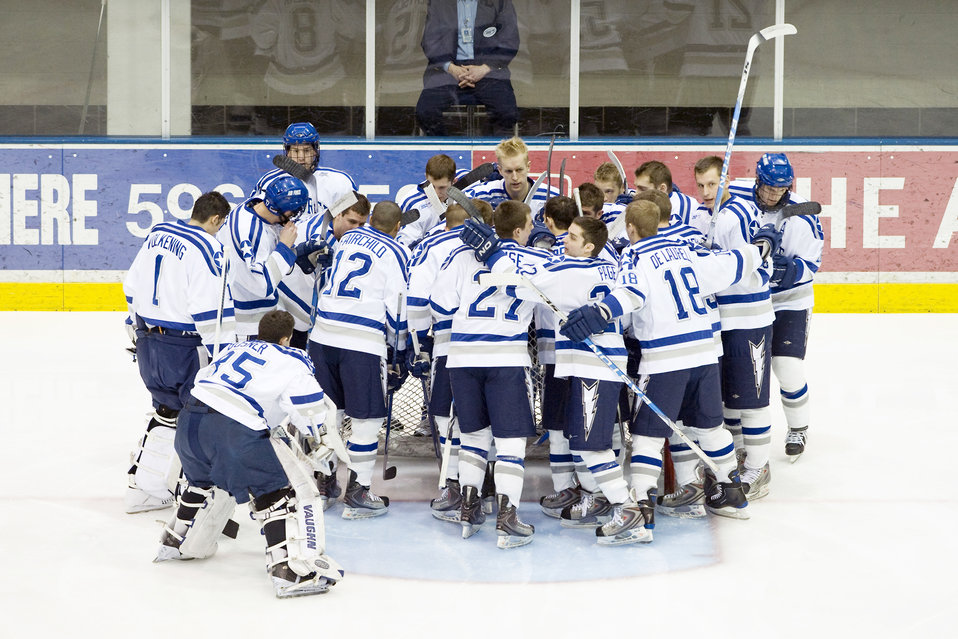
Air Force beats Army Black Knights

The Air Force Falcons hockey team gathers before meeting the Army Black Knights in an Atlantic Hockey Association quarterfinals match March 12, 2010 at the Academy's Cadet Ice Arena. The Falcons defeated the Black Knights 3-0 and went on to win the best-of-three series, defeating Army 4-2 to advance to the AHA Final Four.